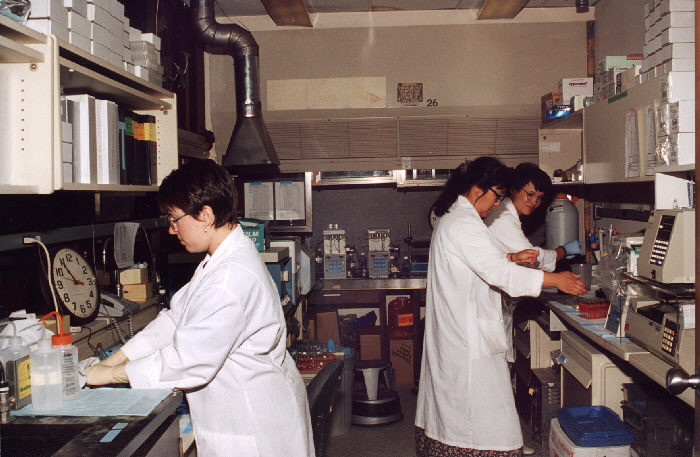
Lab Scene, Building 17, Chamblee, CDC